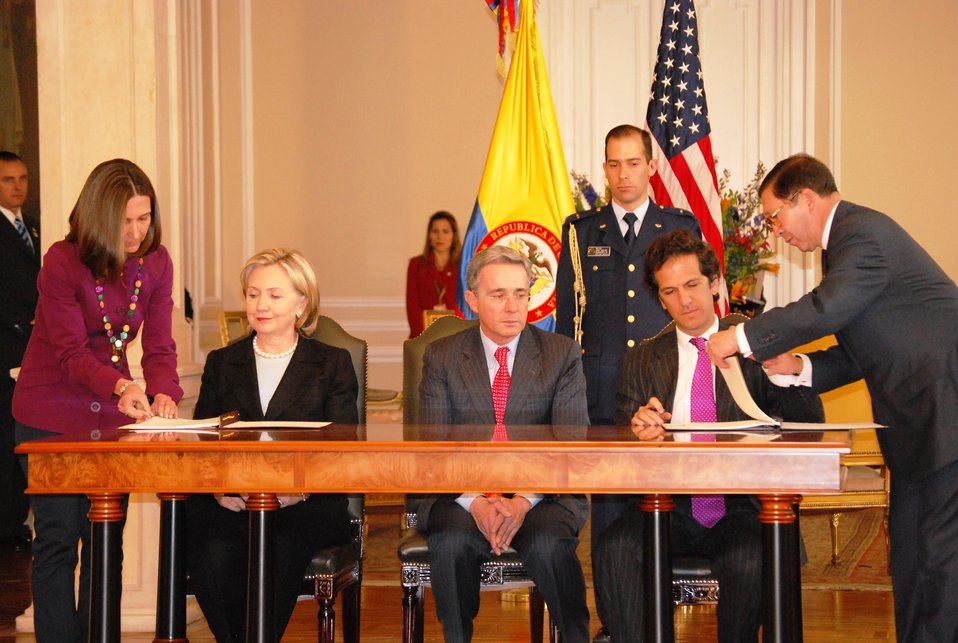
Secretary Clinton and Colombian Foreign Minister Sign Science and Technology Agreement

Colombian President Uribe watches U.S. Secretary of State Hillary Rodham Clinton and Colombian Foreign Minister Jaime Bermudez prepare to sign an agreement that will expand cooperation on science and technology between the United States and Colombia in Bogotá, Colombia, on June 9, 2010.